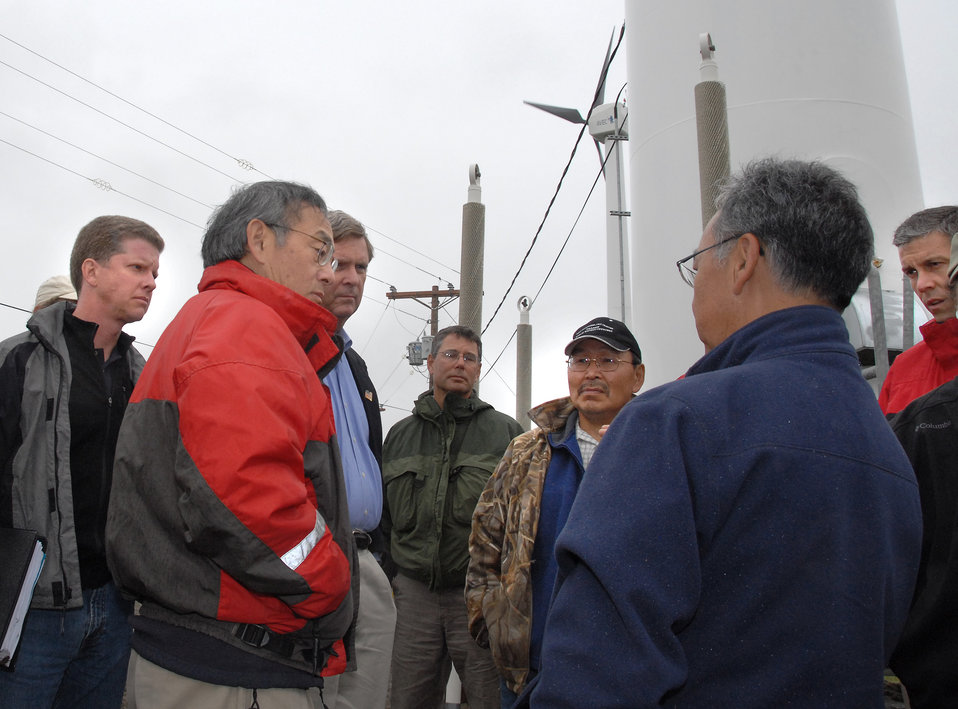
Rural Tour 0341

Rural Tour Alaska Aug 2009